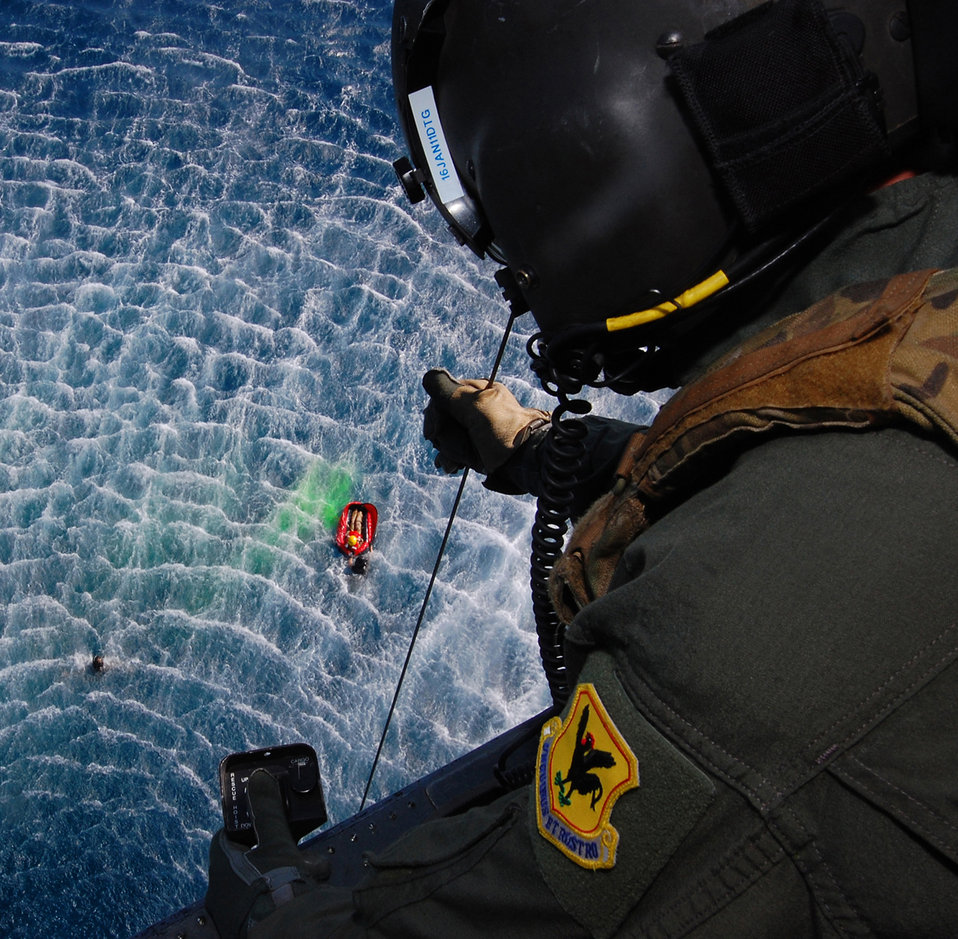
To the rescue

Senior Airman Jeremy Garrett lowers a Stokes rescue basket down into the waiting hands of the pararescuemen below during the Keen Sword exercise Dec. 6, 2010, at Kadena Air Base, Japan. Airman Garrett is a flight engineer with the 33rd Rescue Squadron.